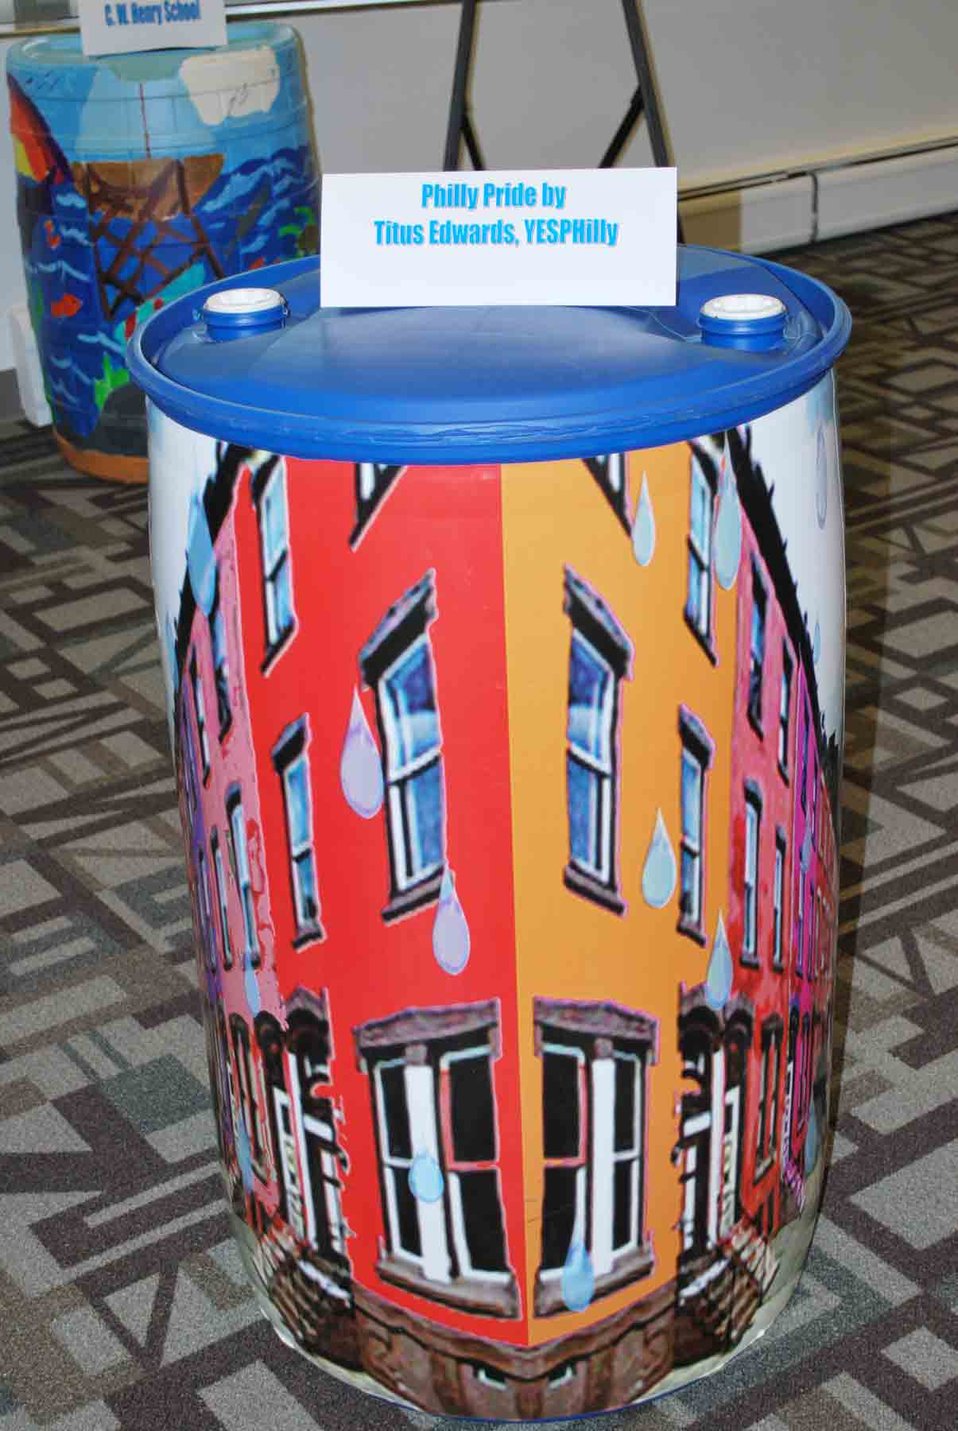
'Philly Pride' shown off by rain barrel

Philly Pride by Titus Edwards of YES Philly. On display in the Public Information Center at EPA Region 3, Philadelphia, PA until September 20, 2013.